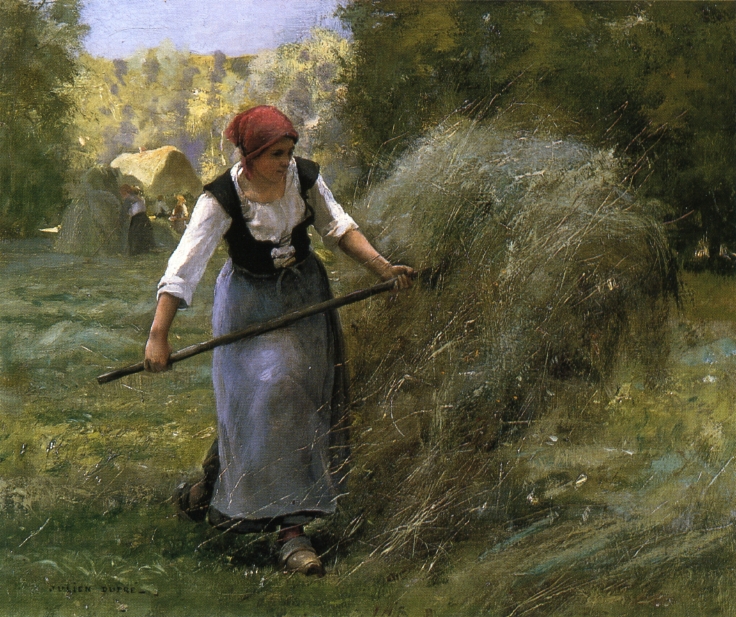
'The Haymaker' by Julien Dupr√©